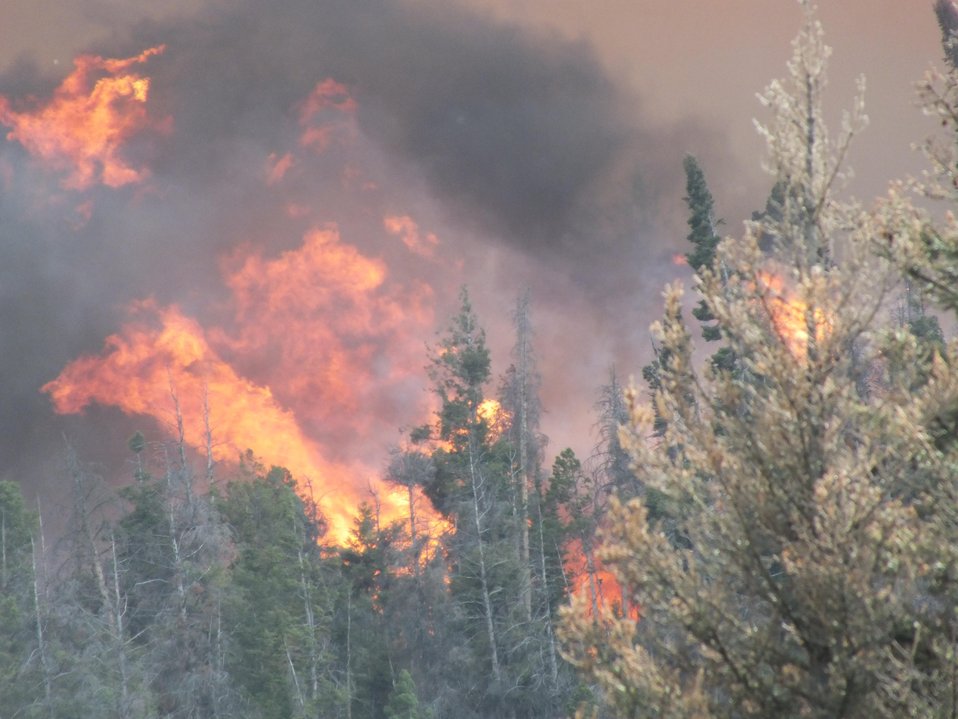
The Lodgepole Fire in the Salmon-Challis National Forest near Challis, ID began on Jul. 20, 2013 by lightning has consumed approximately 20,325 acres and is approximately 40% contained.